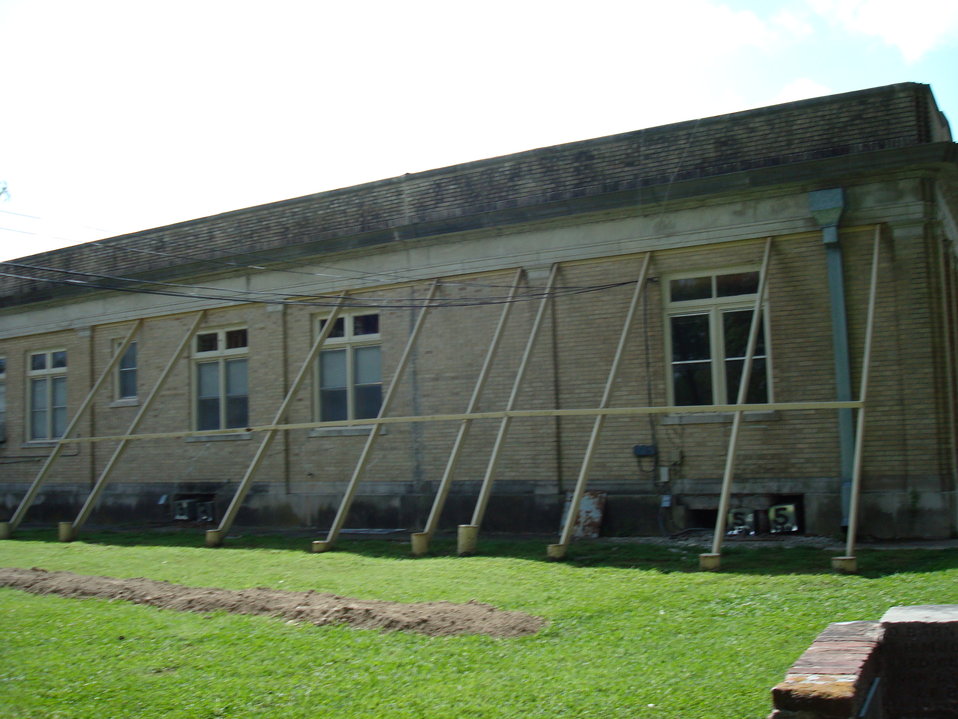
MP Rosedale Courthouse 1

The Bolivar County Courthouse prior to the renovation.